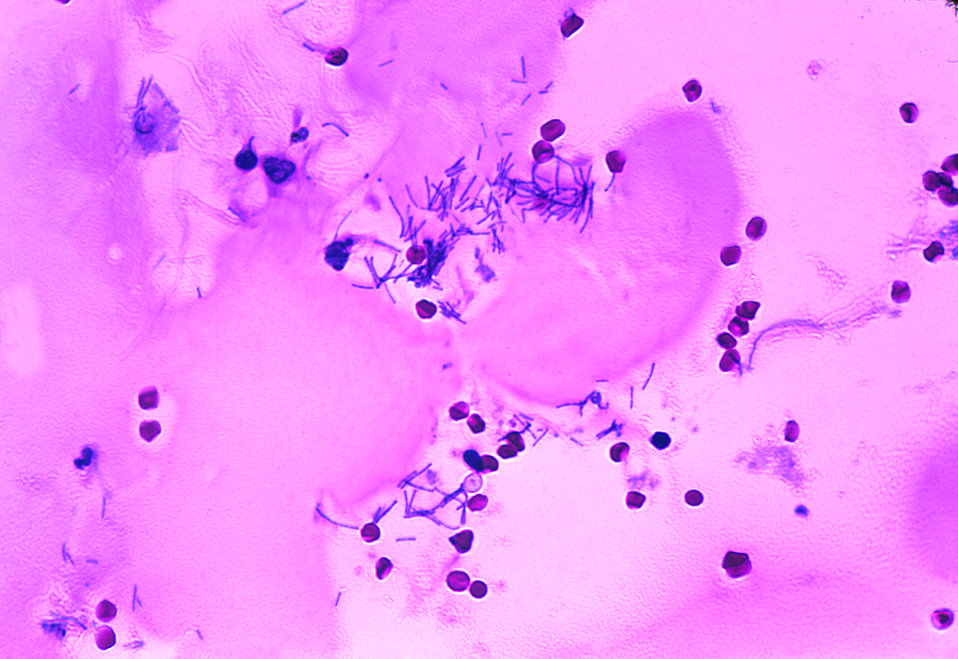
Human meningitis with the presence of Bacillus anthracis.